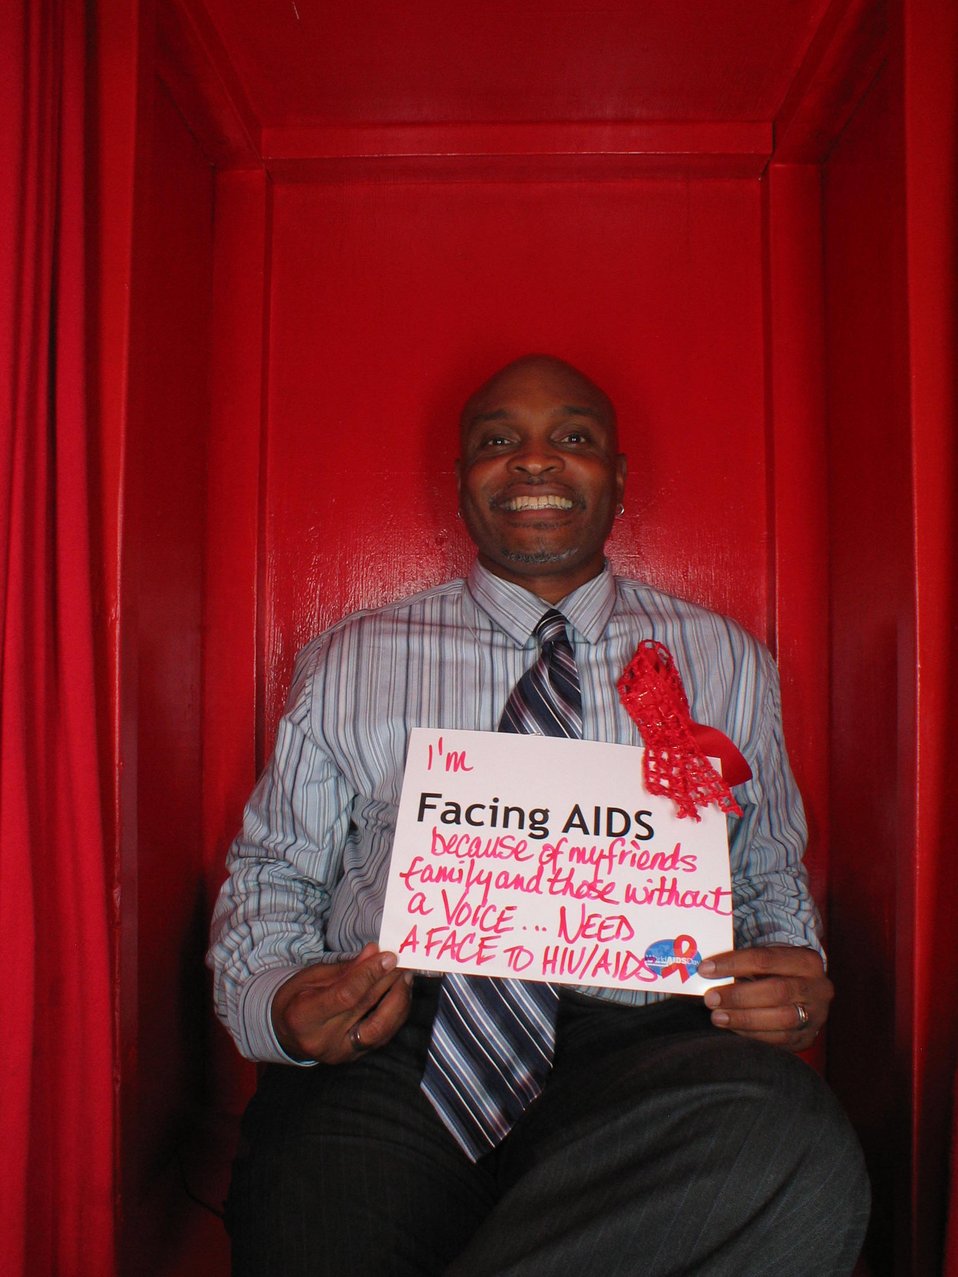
I'm Facing AIDS because of my friends, family and those without a VOICE...need a face to HIV/AIDS.